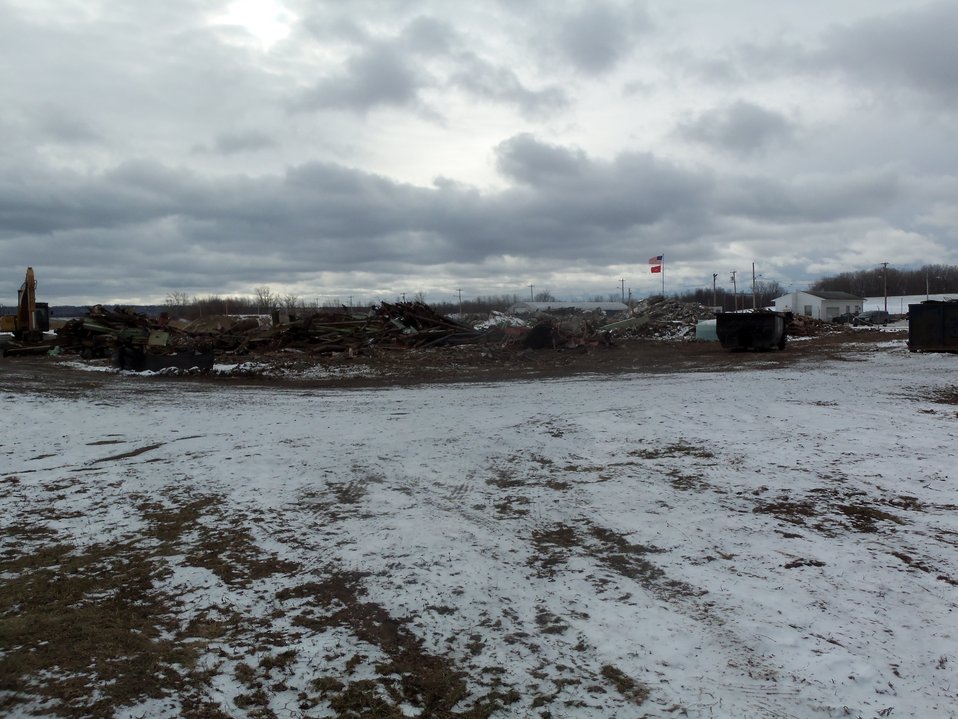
Building 401 remaining debris.

Activities from the Niagara Falls Storage Site, which is associated with the former Lake Ontario Ordnance Works. Formerly Utilized Sites Remedial Action Program (FUSRAP), a program initiated in 1974 to identify, investigate and clean up or control sites that were part of the Nation's early atomic energy and weapons program. Activities at the sites that are eligible for FUSRAP were conducted by Manhattan Engineer District (MED) or the Atomic Energy Commission (AEC), both predecessors of the Department of Energy (DOE). The U.S. Army Corps of Engineers was assigned management of FUSRAP by Congress in 1997.